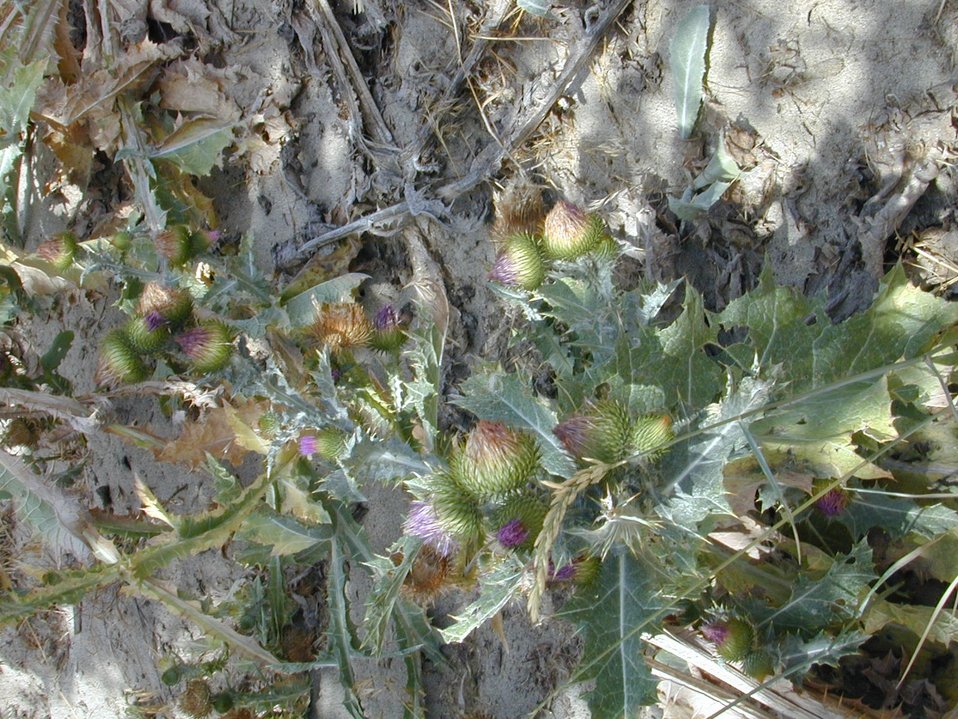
Thistle Cottonwood Field Office UCSC Upper Columbia Salmon Clearwater Districtr